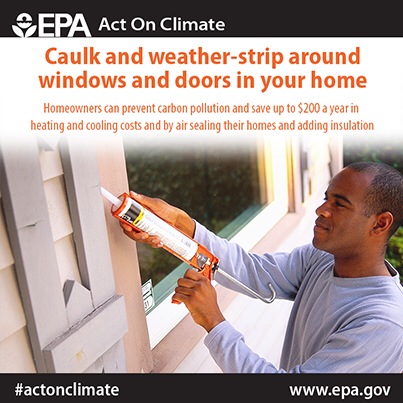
Caulk Entrances

Seal the deal. Caulk and weather-strip around windows and doors in your home to save up to 10% on energy bills and #ActOnClimate.